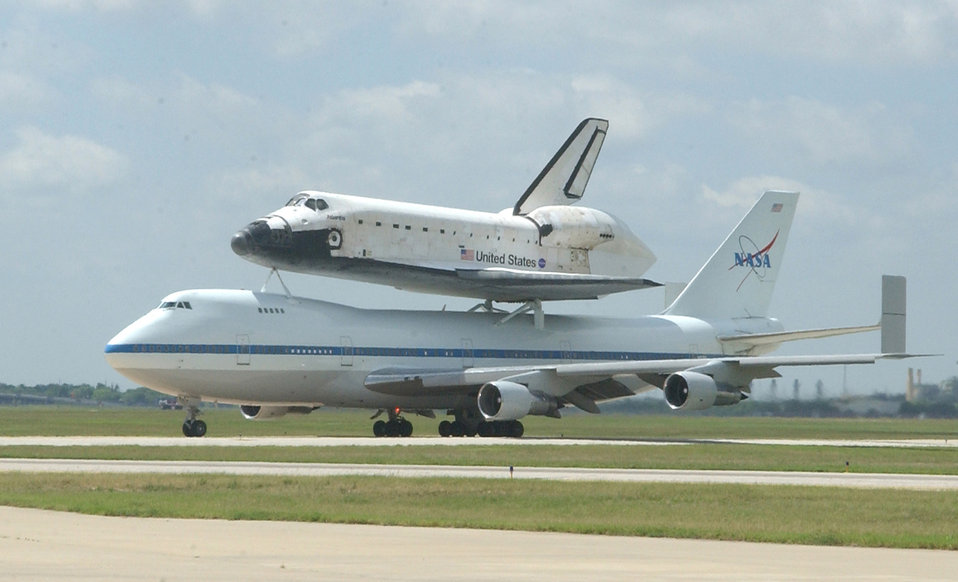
Photo essay: Shuttle transitions through Air Force bases

Space Shuttle Atlantis riding atop a NASA-modified Boeing 747 Shuttle Carrier Aircraft lands June 2 at Lackland Air Force Base, Texas. The shuttle is being ferried from Edwards Air Force Base, Calif., back to Florida after a 13-day mission in space to repair and upgrade the Hubble Space Telescope.